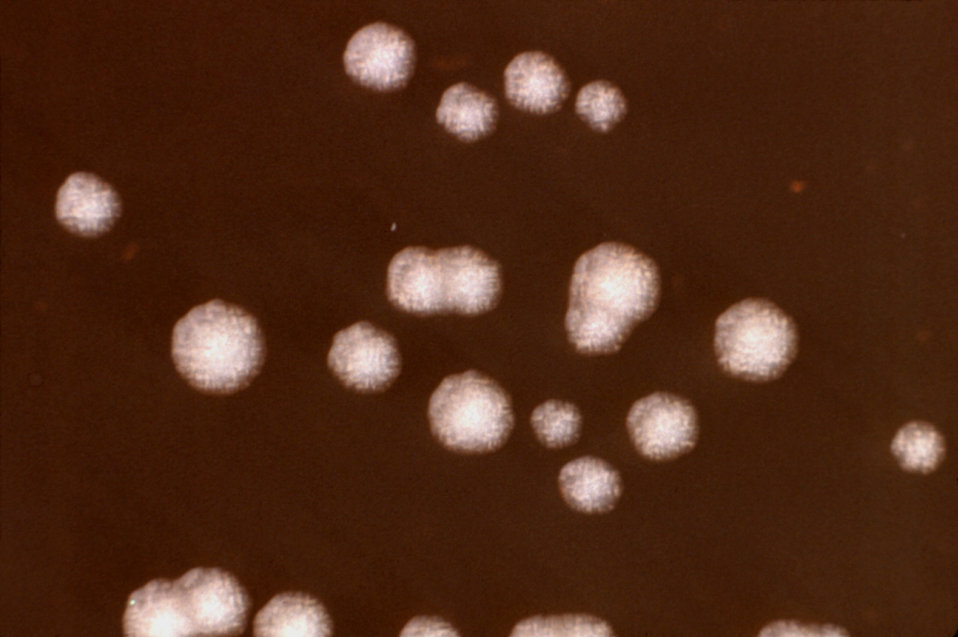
Under a low magnification of 2X, this photograph depicted a number of Legionella pneumophila colonies that had been cultivated on Feeley-Gorman (FG) agar. Note the 'cut-glass' appearance displayed by the round, off-white colored colonies. FG agar is used particularly in the cultivation of Legionella spp. bacteria, and is composed of casein (acid hydrolyzed), agar, beef extract, starch, cysteine and iron (III) pyrophosphate (Fe4(P2O7)3).